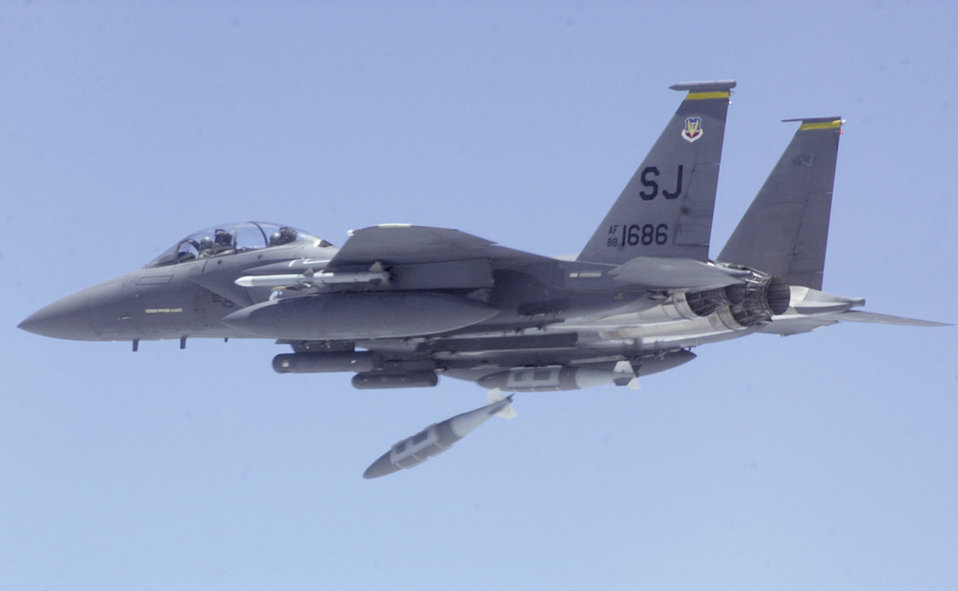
More strike in the Eagle

OVER FLORIDA -- Capts. Nikolas Stengle and Chris Auger drop a joint direct attack munition from their F-15E Strike Eagle on June 13. They are assigned to the 336th Fighter Squadron.